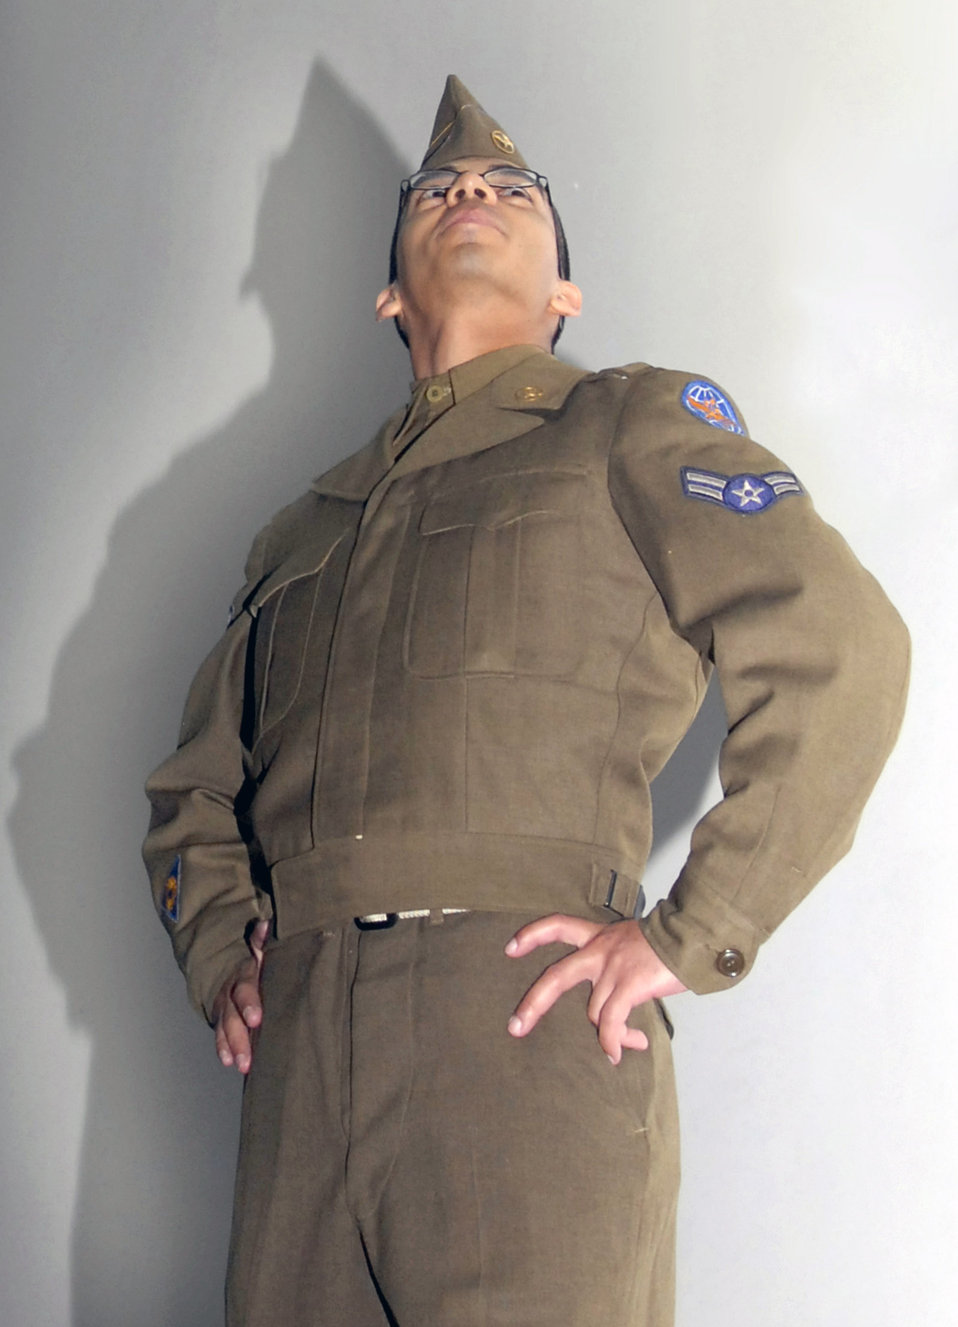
Operation Uniform Delta highlights heritage

Senior Airman Eliezer Cruz-Flacon models the World War II Army Air Corps transitional uniform with Air Force accouterments during Operation Uniform Delta April 27 at a base in Southwest Asia. Operation Uniform Delta was an event displaying the history and birth of the Air Force uniform and showed the transitions that it underwent through the years. Airman Cruz-Falcon is assigned to the 379th Expeditionary Communications Squadron.